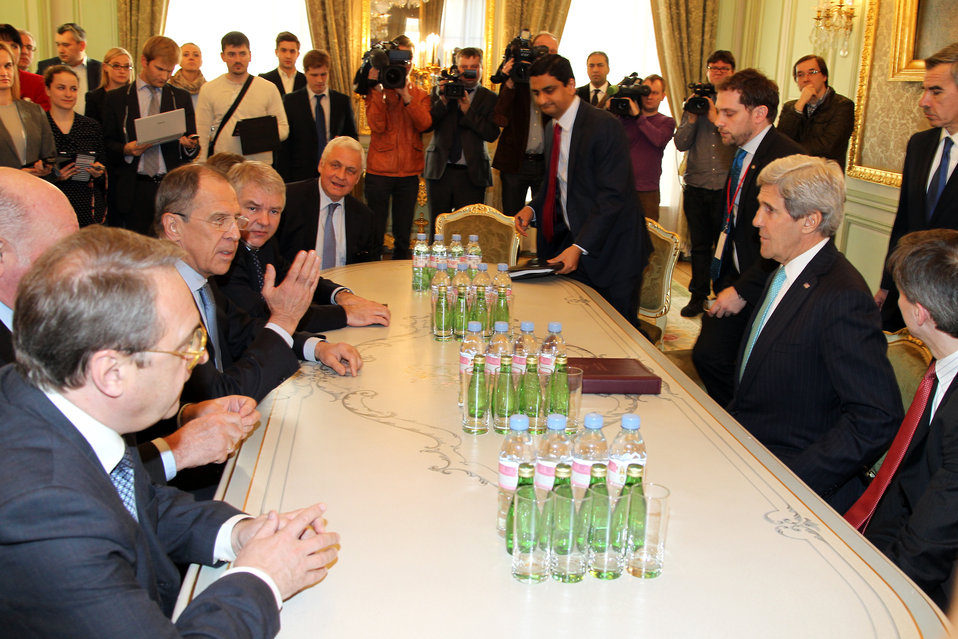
Secretary Kerry Meets With Russian Foreign Minister Lavrov

U.S. Secretary of State John Kerry meets with Russian Foreign Minister Sergey Lavrov in Paris, France, on March 5, 2014.